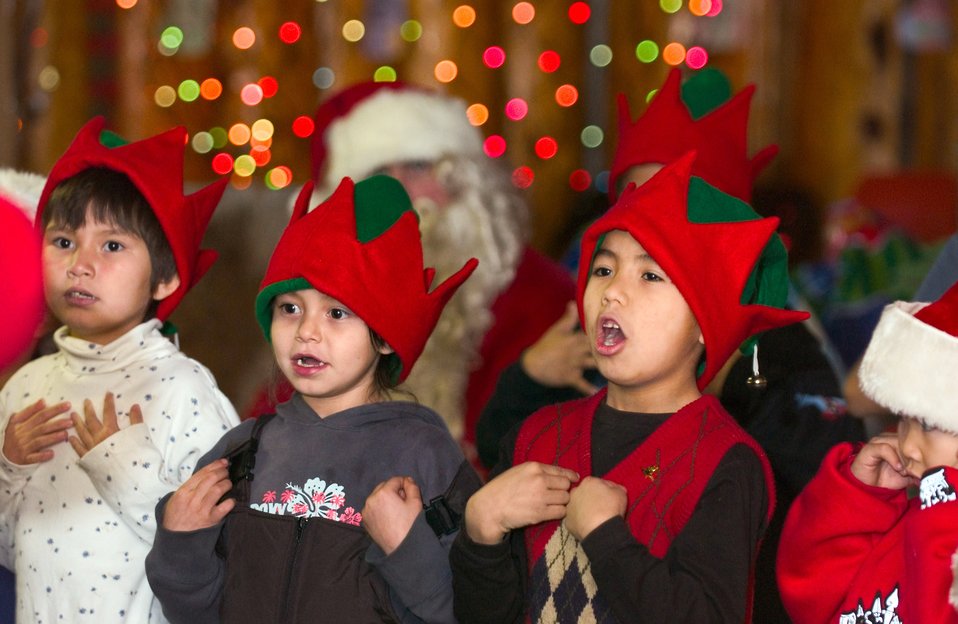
Airmen bring holidays to remote village

ARCTIC VILLAGE, Alaska -- Athabascan children sing carols for Airmen from Elmendorf Air Force Base, Alaska. The children and community gathered in the village town hall to share their culture with the visiting Airmen and their families.